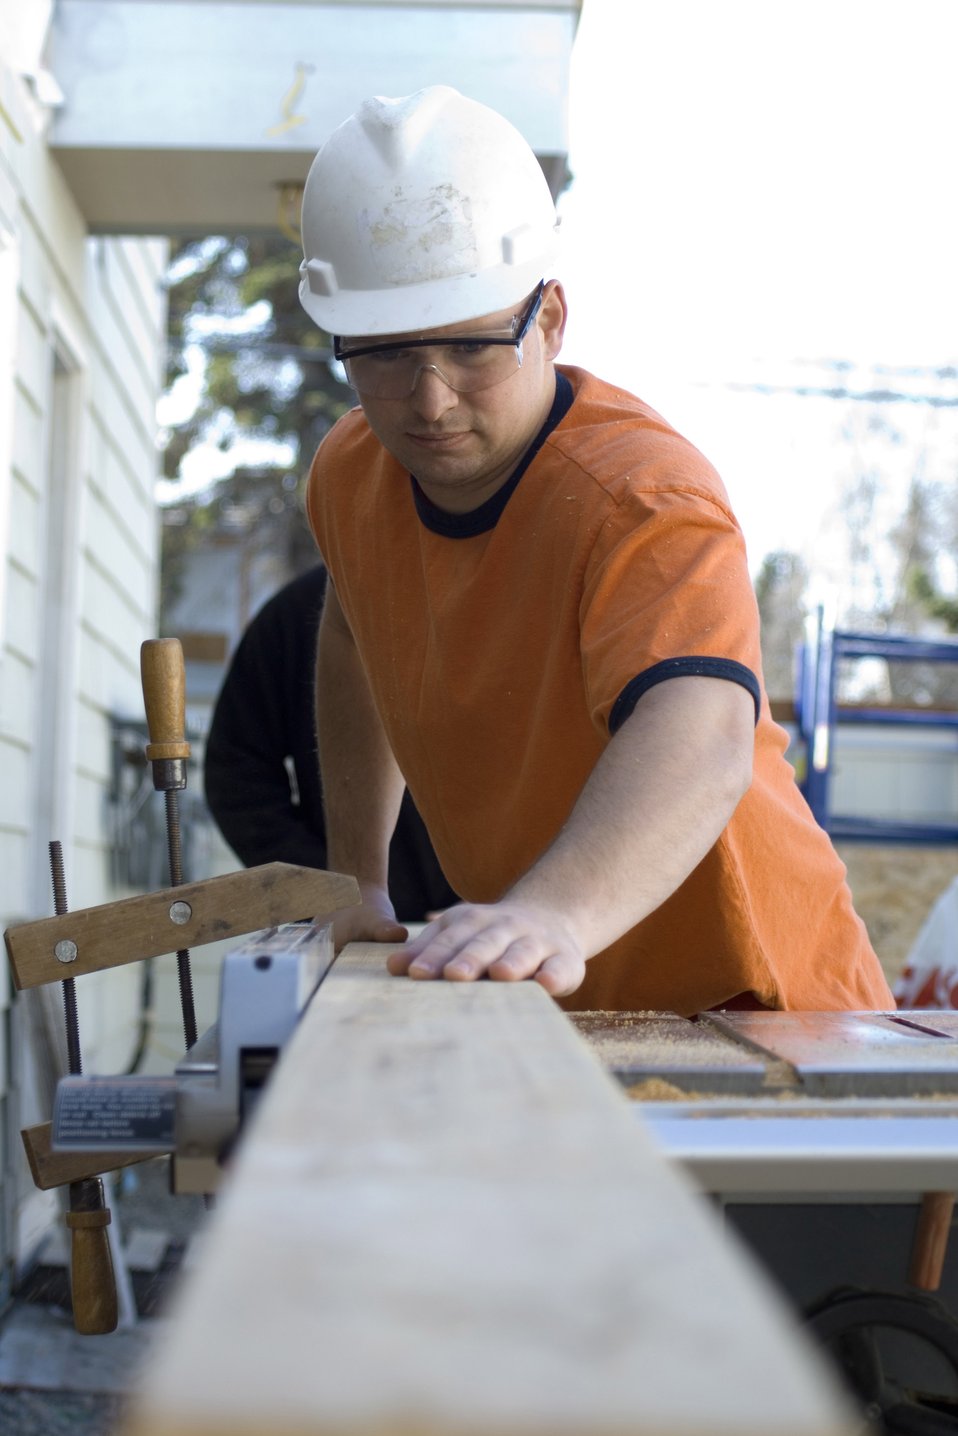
Elmendorf Airmen lend a hand

Staff Sgt. Michael McClary pushes lumber through a table saw at a Habitat for Humanity work site May 3 at Anchorage, Alaska. Sergeant McClary is the First Term Airman Center flight leader and a member of the 3rd Civil Engineer Squadron Structures Section at Elmendorf Air Force Base, Alaska.